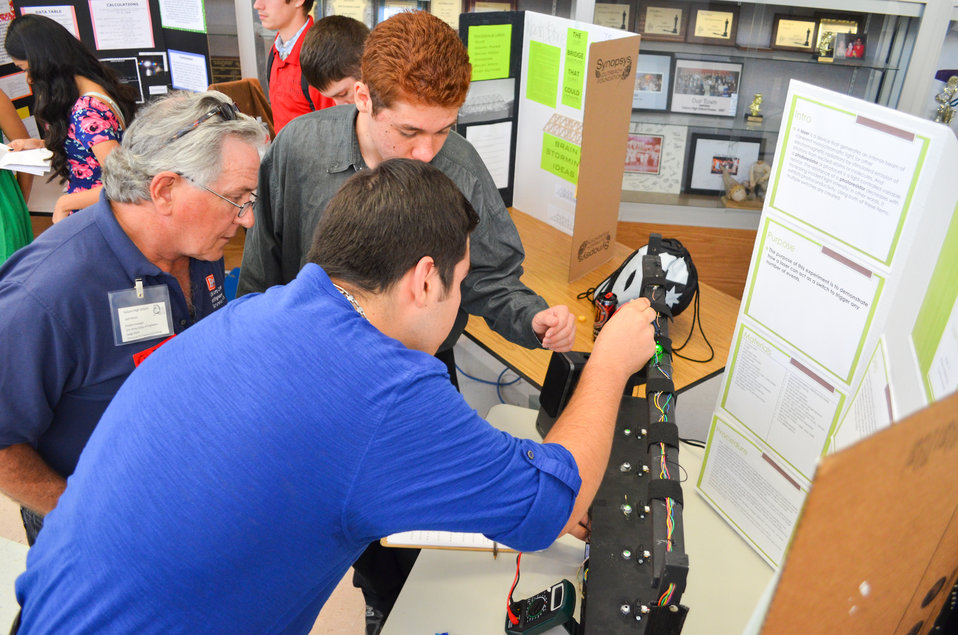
Jack Davies listens to students' voice synthesizer project

Jack Davies, a project engineer with the U.S. Army Corps of Engineers Sacramento District, provides constructive feedback on a students' voice synthesizer during Folsom High School's seventh-annual Engineering Challenge April 11, 2014, in Folsom, Calif. Student projects included: hovercrafts, catapults, Tesla coils, electromagnetic propulsion devices, pneumatic wind turbines, voice synthesizers, hydrogen fuel cells, solar electric boats and cars, gene transformation, and orthopedic implants.